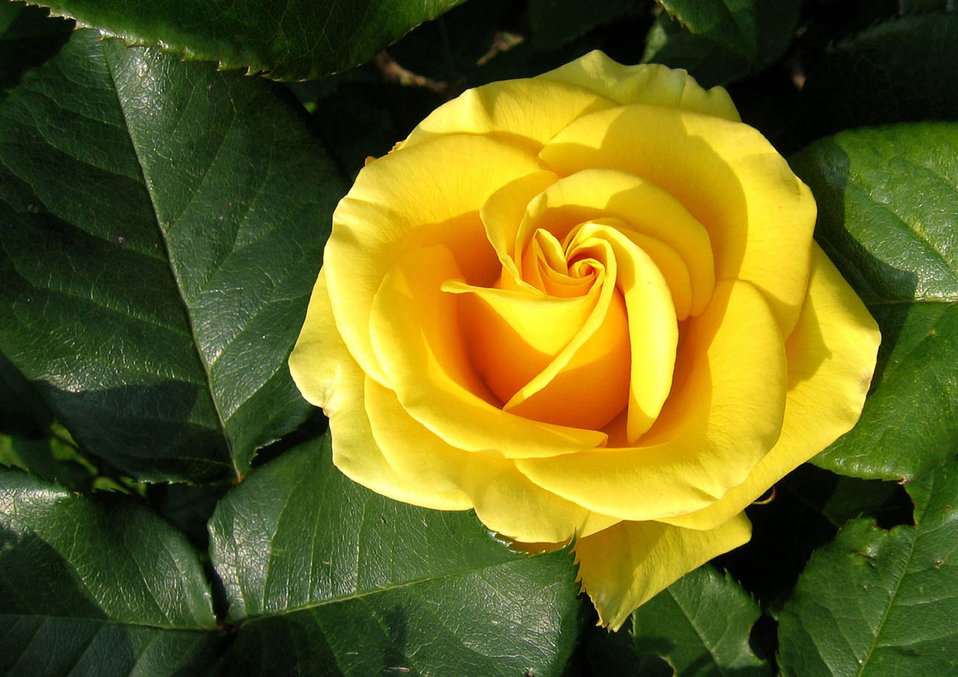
Yellow rose with leaves.